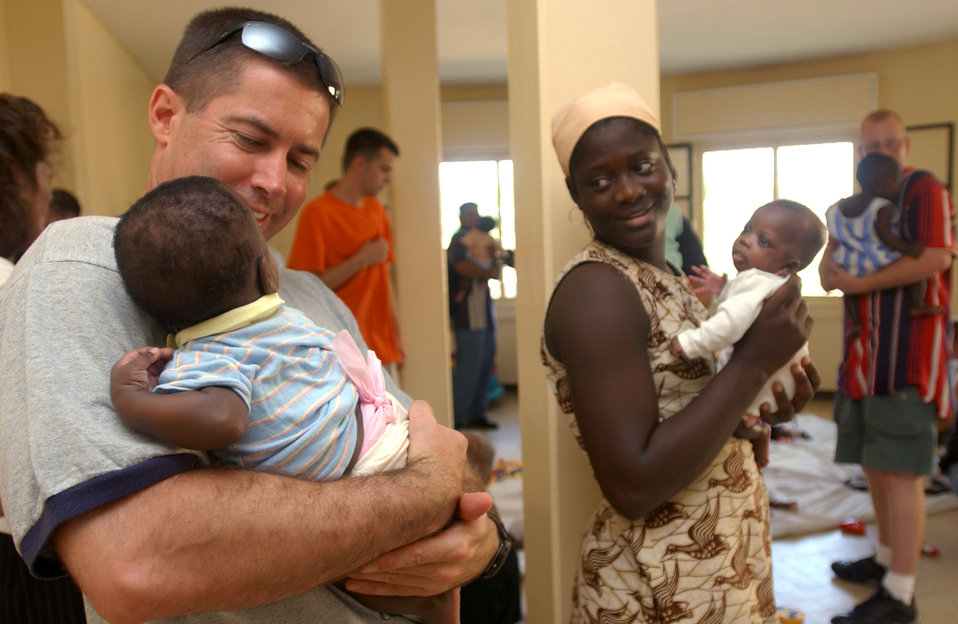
Pretty babies

DAKAR, Senegal -- Lt. Col. Tony Henderson spends time holding a baby boy at the Pouponniere de Medina orphanage here. The 398th Air Expeditionary Group donated clothes, toys and miscellaneous supplies to the orphanage Oct. 2. Henderson is commander of the 720th Expeditionary Air Base Squadron.